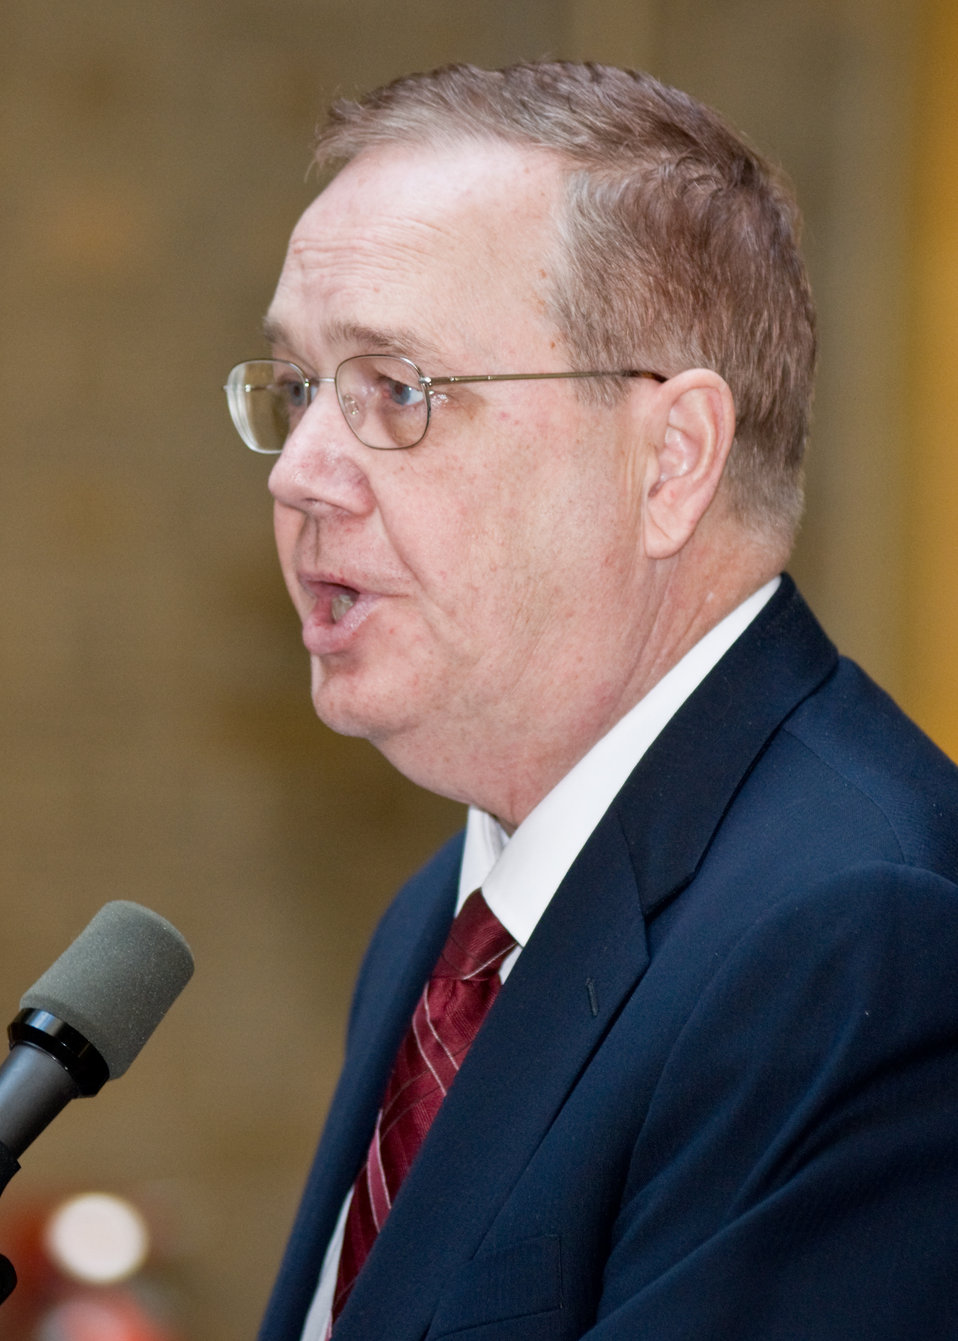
Dallas Tonsager, Undersecretary Rural Development welcomes and offers opening comments on the celebration of October as National Co-op Month at an event at the Department of Agriculture, Tuesday, October 5, 2010 in Washington, DC. USDA Photo 10di1517-09 by Bob Nichols.